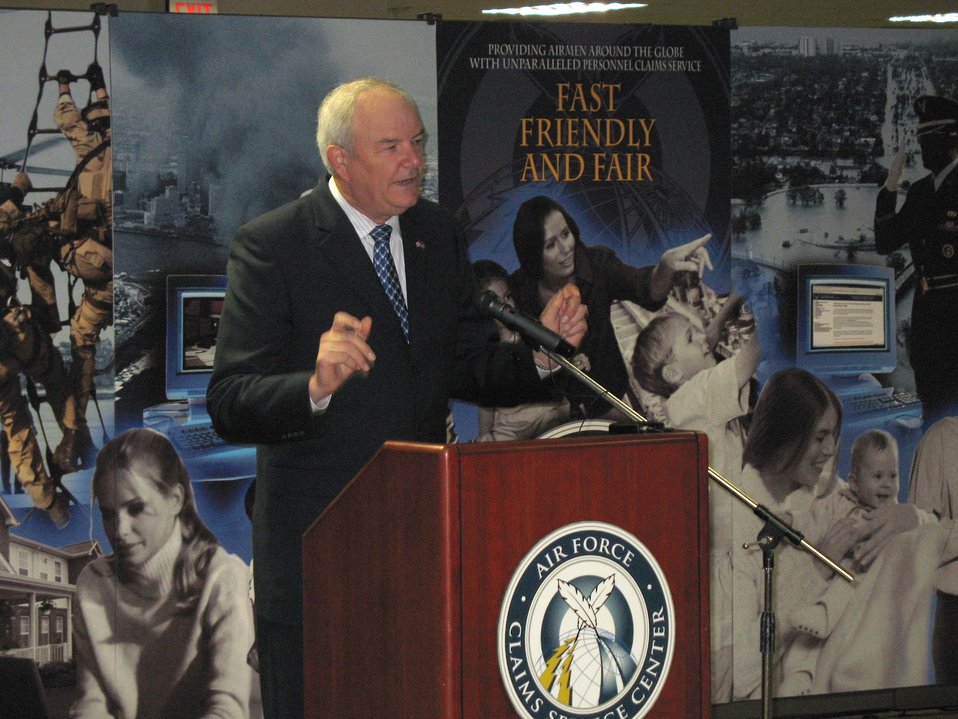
Air Force Claims Service Center opens

Secretary of the Air Force Michael W. Wynne highlights the benefits new Air Force Claims Service Center March 23 during its opening ceremony in Kettering, Ohio. The center consolidates all Air Force claims centers into one location. Now, Airmen can file claims via the Internet and obtain paralegal assistance 24 hours a day, seven days a week.